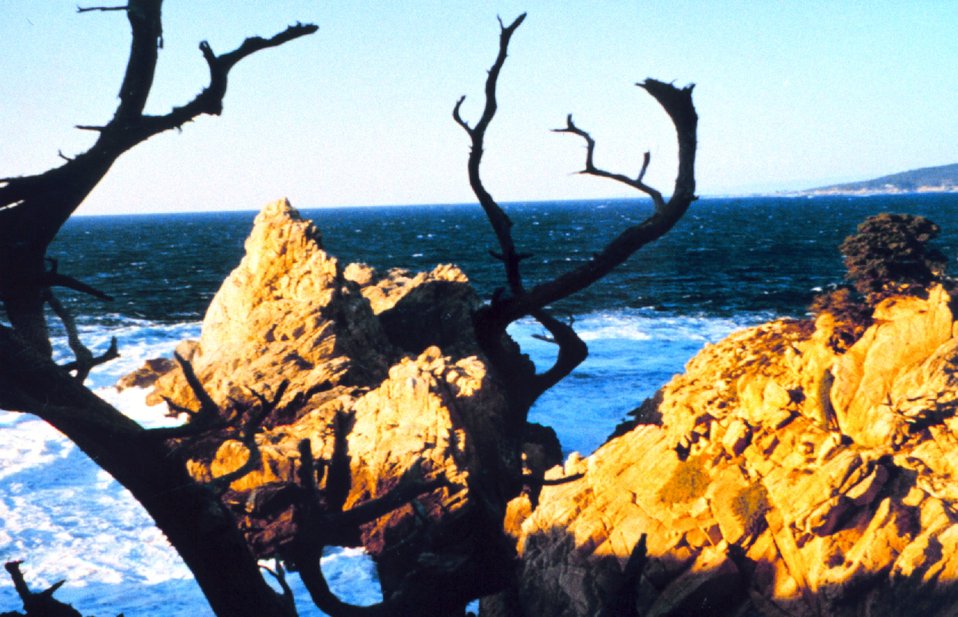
Point Lobos with sublime view of granite headland framed between branches of an ancient Monterey cypress.